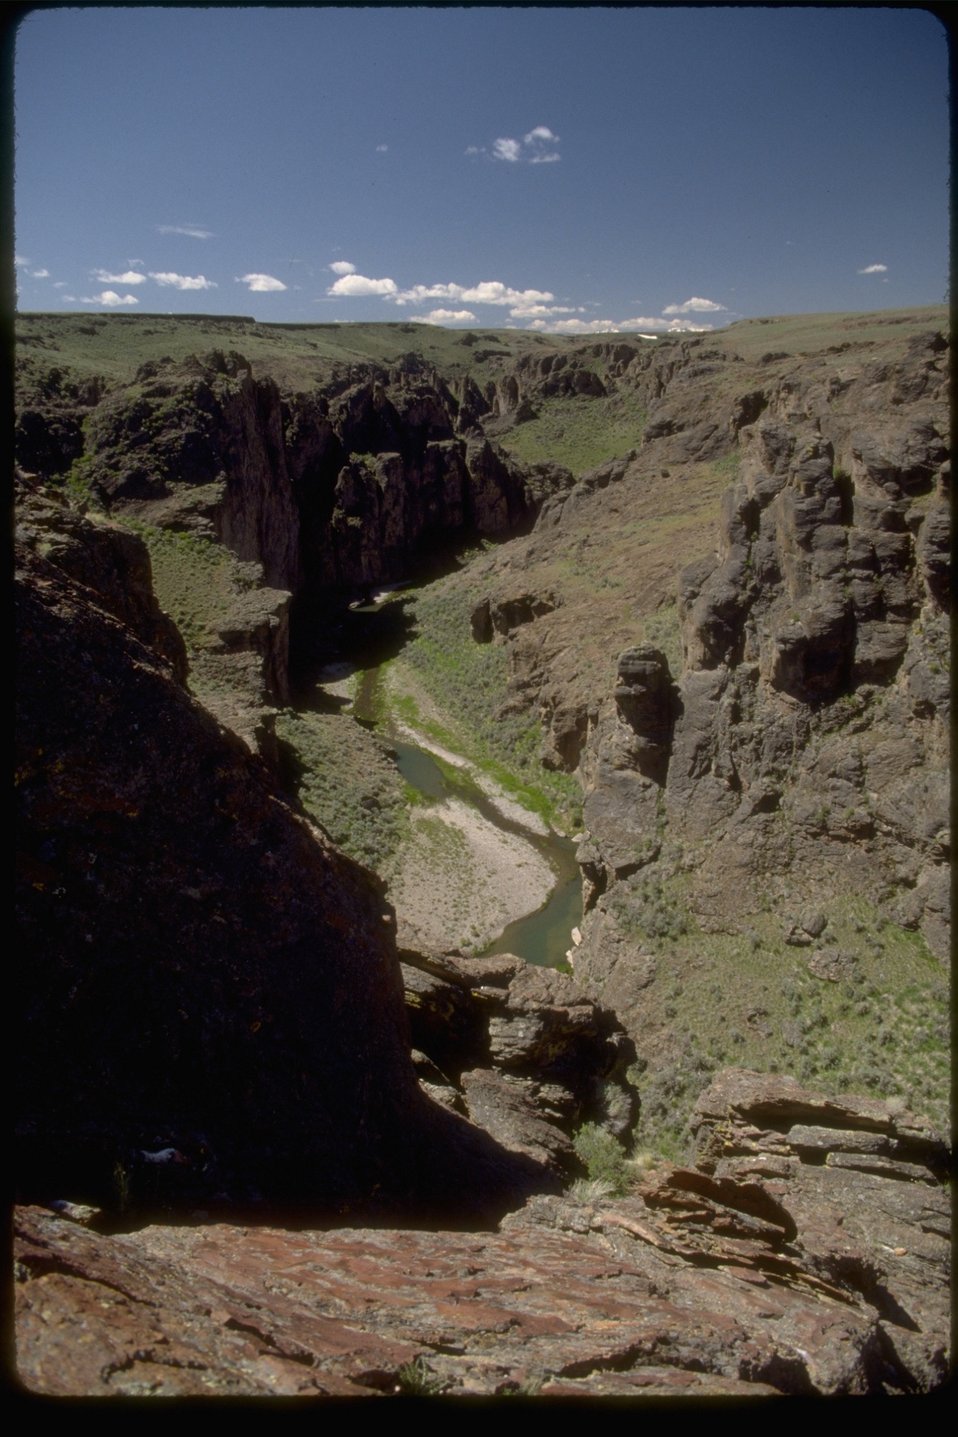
View of river from rim rock in the Upper West Little Owyhee Wilderness Study Area. OR 3-173